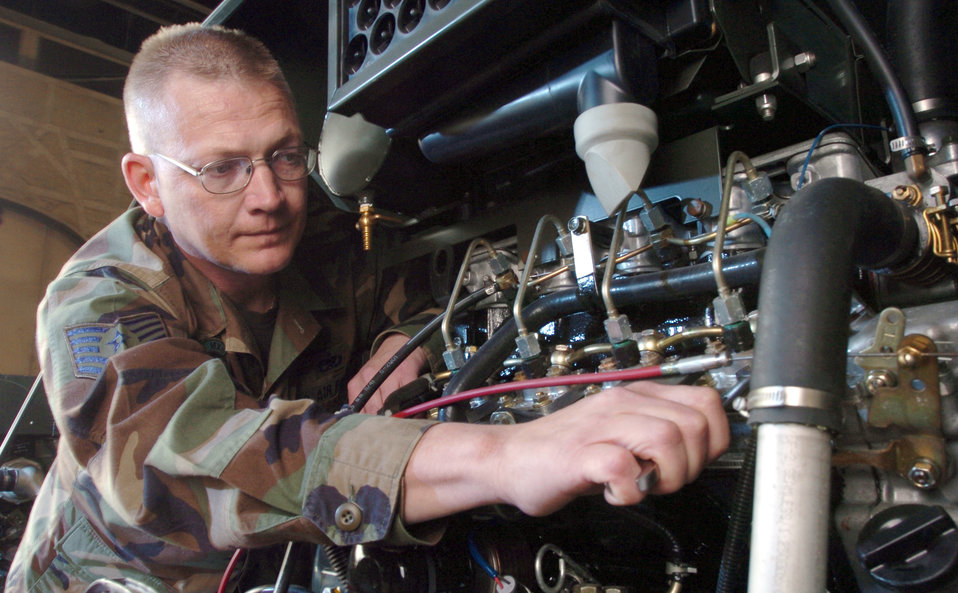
Looking for trouble

YOKOTA AIR BASE, Japan -- Tech. Sgt. James Champion installs an injector on a self-generating nitrogen servicing cart. The mission of the 374th Maintenance Squadron Airmen is to inspect, service and repair assigned and in-transit C-130 Hercules aircraft here. They also maintain mission-ready aircraft to sustain contingency and peacetime missions throughout the Pacific theater. Sergeant Champion is an aerospace generation equipment mechanic with the squadron.